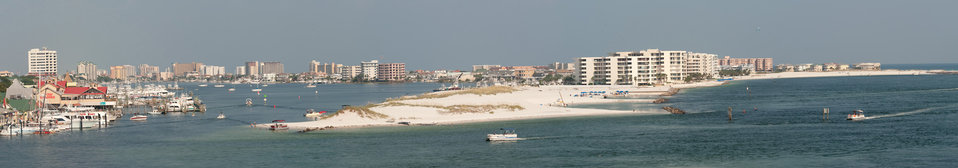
Turtle Eggs avoid Gulf Oil Danger

The sport fishing and resort city of Destin, Fla. is just 12 miles east of the Loggerhead Sea Turtle nest that was relocated from Eglin Air Force Base on August 9, 2010. The base beach is a restricted area and home to many endangered species.